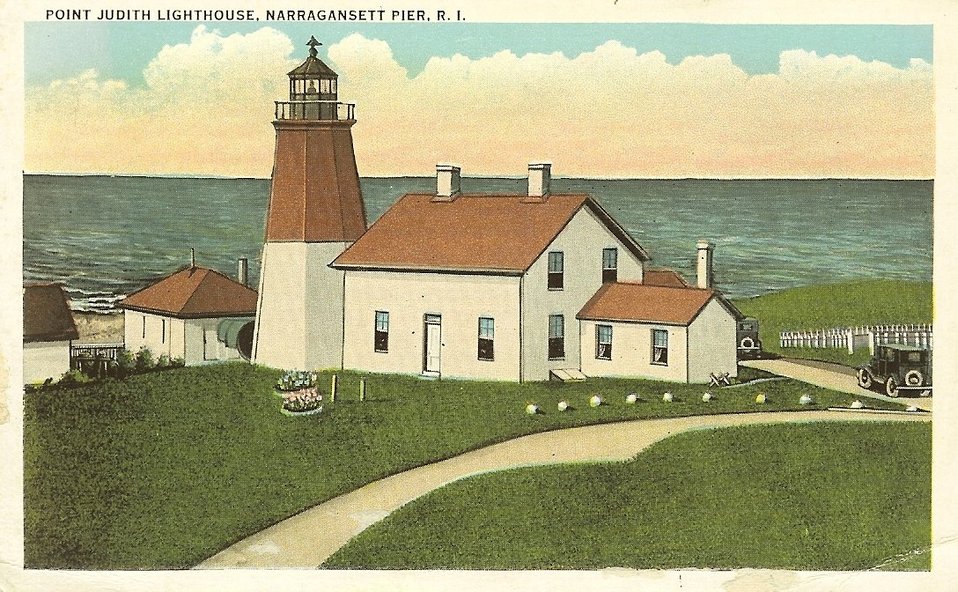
Point Judith Light